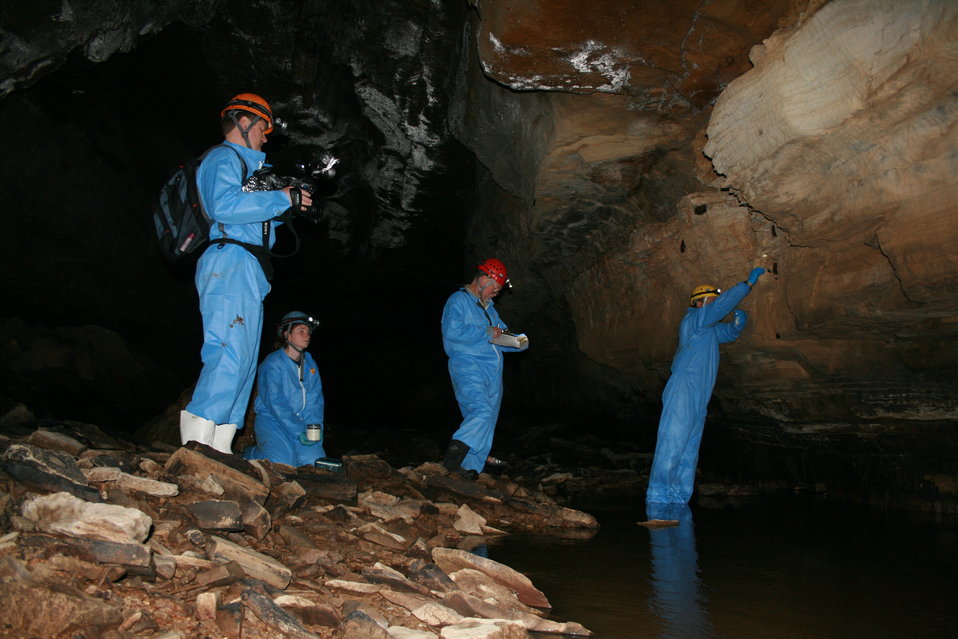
Filming swabbing bats, collecting air samples

Videojournalist Fritz Faerber MDC biologists collecting research samples from healthy big brown bats (Eptesicus fuscus)